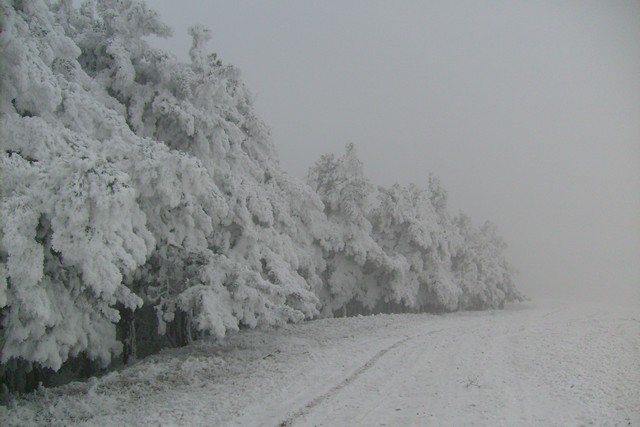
Italiano: 'Locul Popii' d' inverno